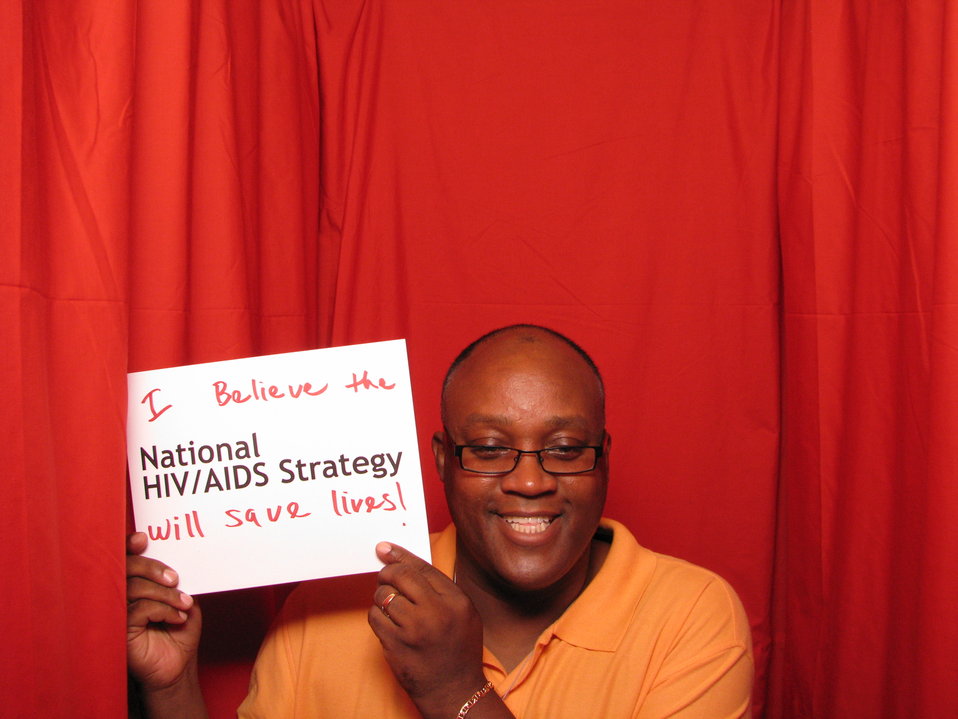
I believe the National HIV/AIDS Strategy will save lives!

From the AIDS.gov photo booth at the U.S. Conference on AIDS, September 2010 (Orlando, FL).